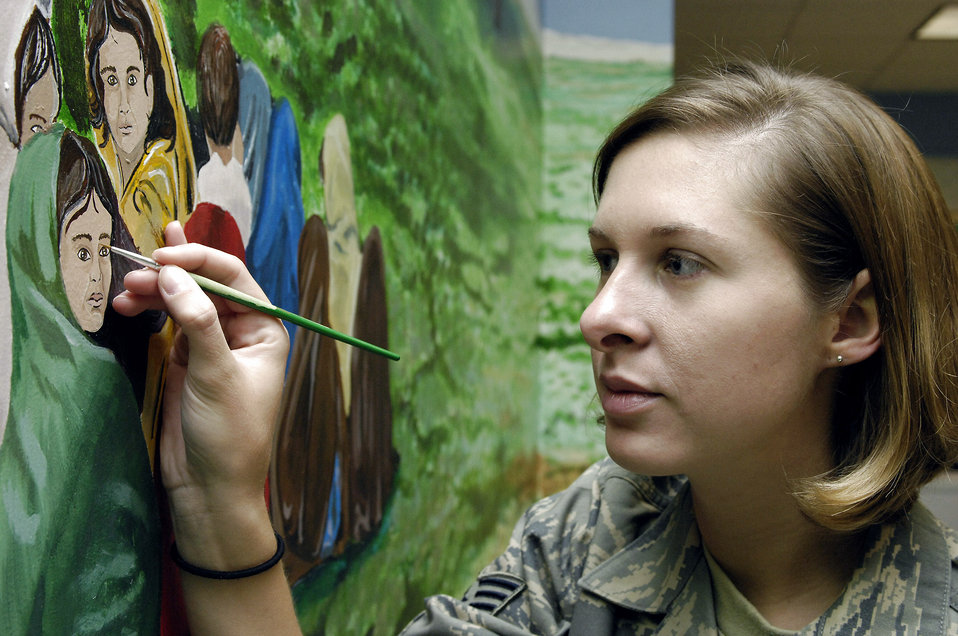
Art of War

Staff Sgt. Jessica Newcomb does some final touch ups on a mural she and 38 other artists painted in the hospital conference room at Bagram Air Base, Afghanistan, April 29. The mural features local culture and a panoramic view of the mountains near Bagram AB. Sergeant Newcomb is a Craig Joint Theater Hospital medical technician.